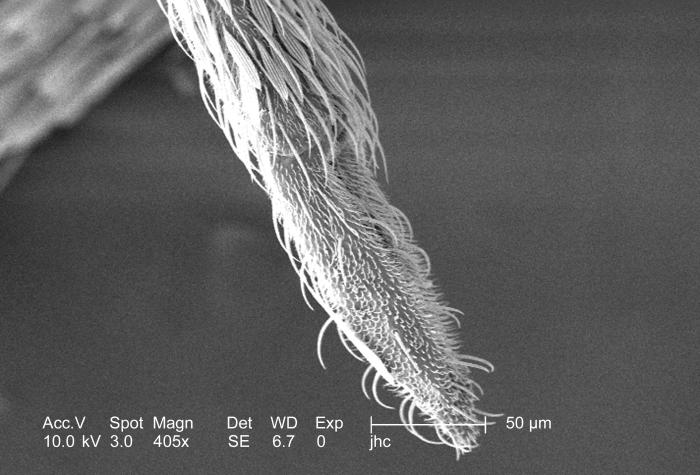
Magnified 405x, this scanning electron micrograph (SEM) revealed the ornately festooned tip of an Anopheles gambiae mosquito's proboscis. Seen in the field of view is actually the sheath that covered the pair of the needle-sharp "stylets", which together are known as the "fascicle". The larger of the two stylets, known as the "labrum", when viewed in cross-section, takes on the shape of a "V", and acts as a gutter, which directs the ingested host blood towards the insect's mouth.